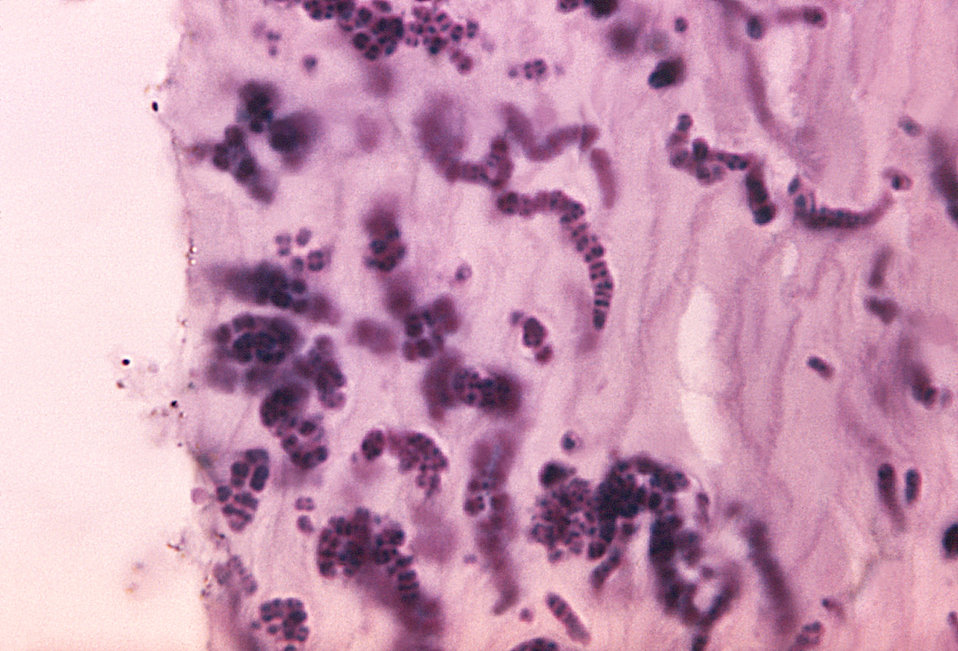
Using a PAS staining technique, and magnified 1187X, this photomicrograph of a skin sample from the sole of a patient's foot, revealed histopathologic signs indicatine of Pitted Keratolysis due to a Gram-positive Dermatophilus sp.bacterial infection.